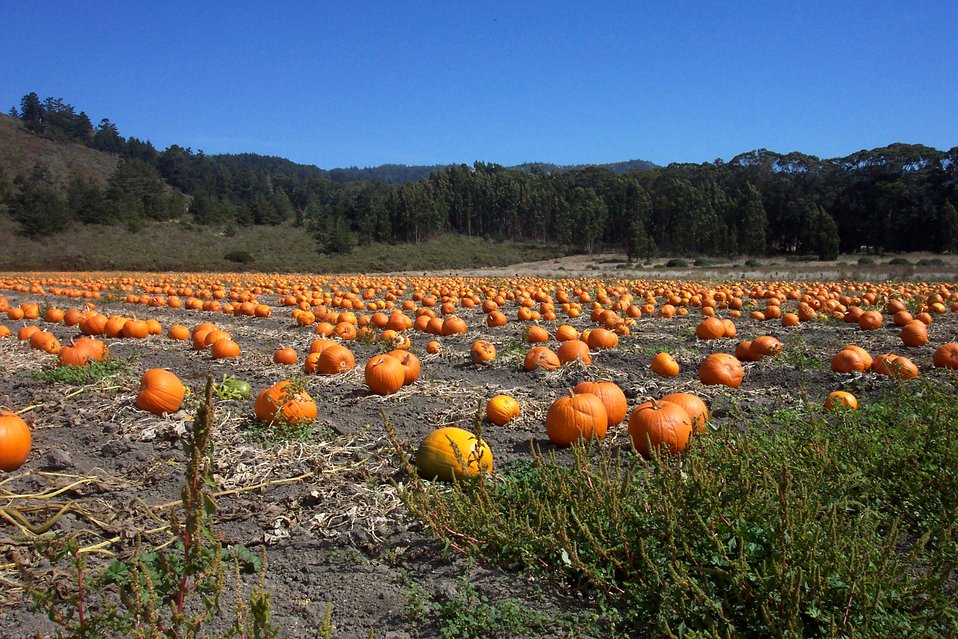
A pumpkin patch along Highway 1 north of Davenport.